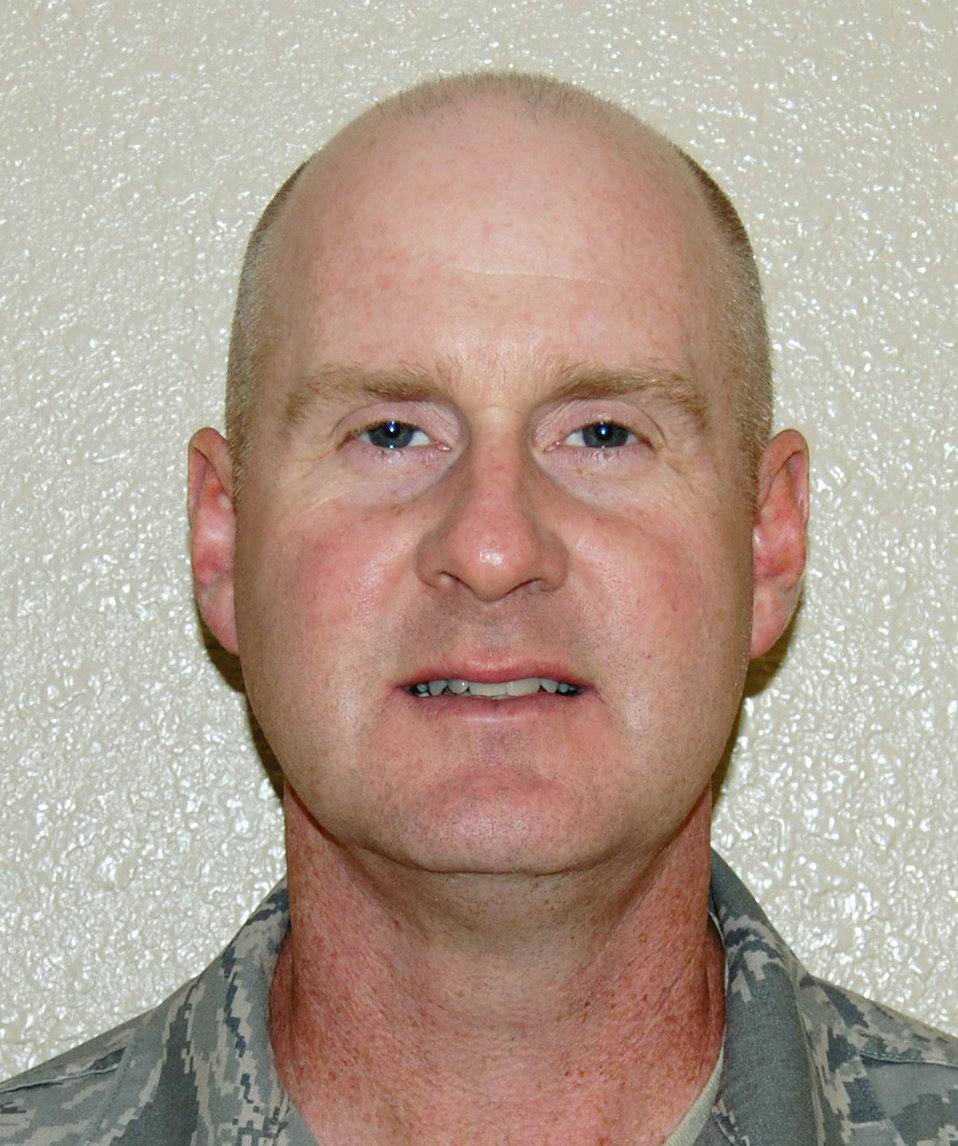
Airman leaves AF legacy

Senior Master Sgt. Clayton French, with the 81st Medical Operations Squadron at Keesler Air Force Base, Miss., left a legacy to the Air Force when he retired after 28 years of service. He penned a base newspaper commentary that became the inspiration for the Airman's Creed.